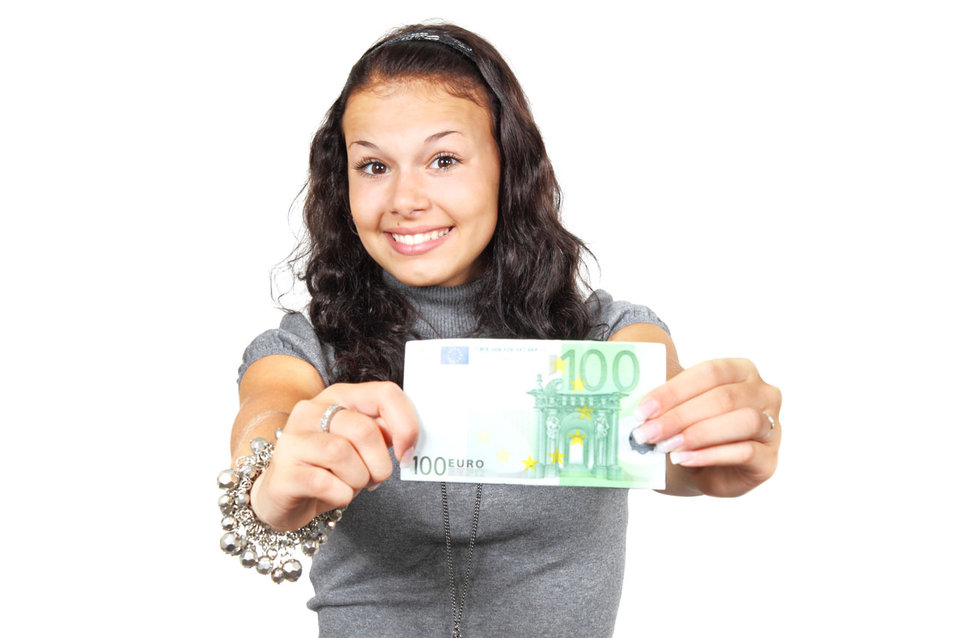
Young woman with euros isolated on white background.